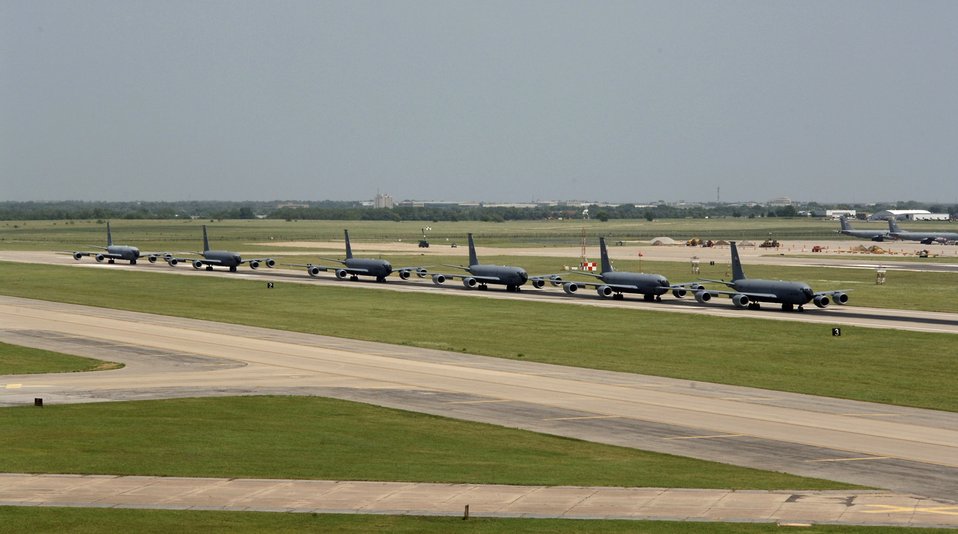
Elephant walk

Six KC-135 Stratotankers demonstrate the elephant walk formation as they taxi down a runway right behind each other during a generation exercise Aug. 5 at McConnell Air Force Base, Kan. The exercise showcased McConnell AFB aircrews' capability to prepare a flight and take off within minutes of being notified of a mission.